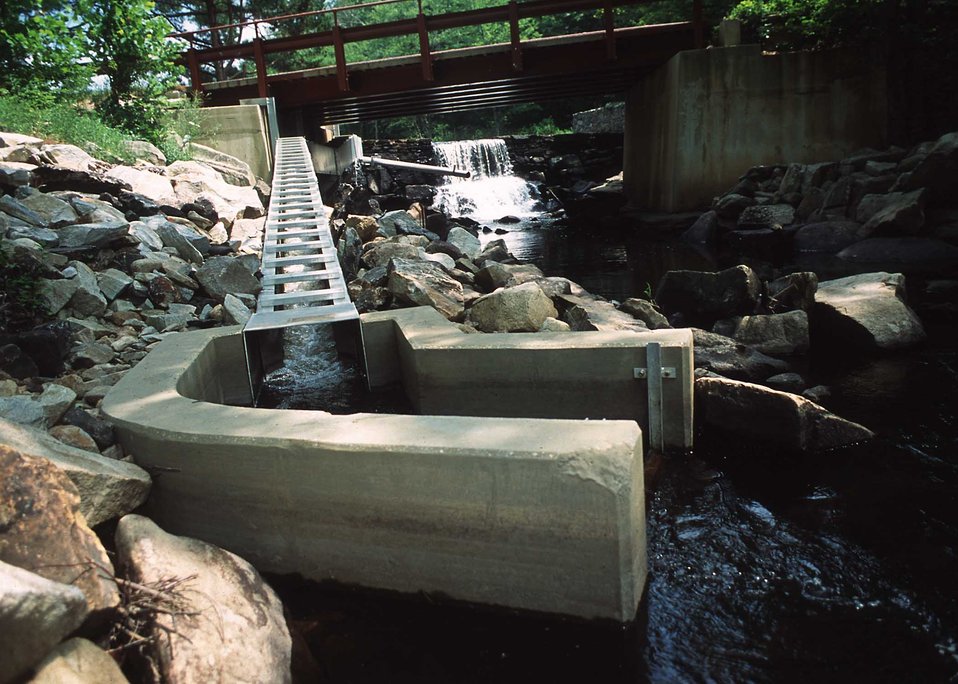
An Alaskan Steepass fishway on the Eightmile River, funded in part by the NRCS-WHIP program, to provide passage to spawning habitat for migratory fish.